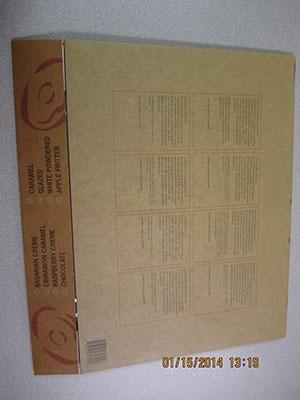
RECALLED – All Varieties of Donuts, Cinnamon Donut Holes, and Mixed Nut Candy

January 17, 2014 – Product Recall – Rise’N Roll Bakery Issues Allergy Alert on Undeclared Egg in All Their Donut Varieties and Undeclared Peanuts in Nutty Crunch.